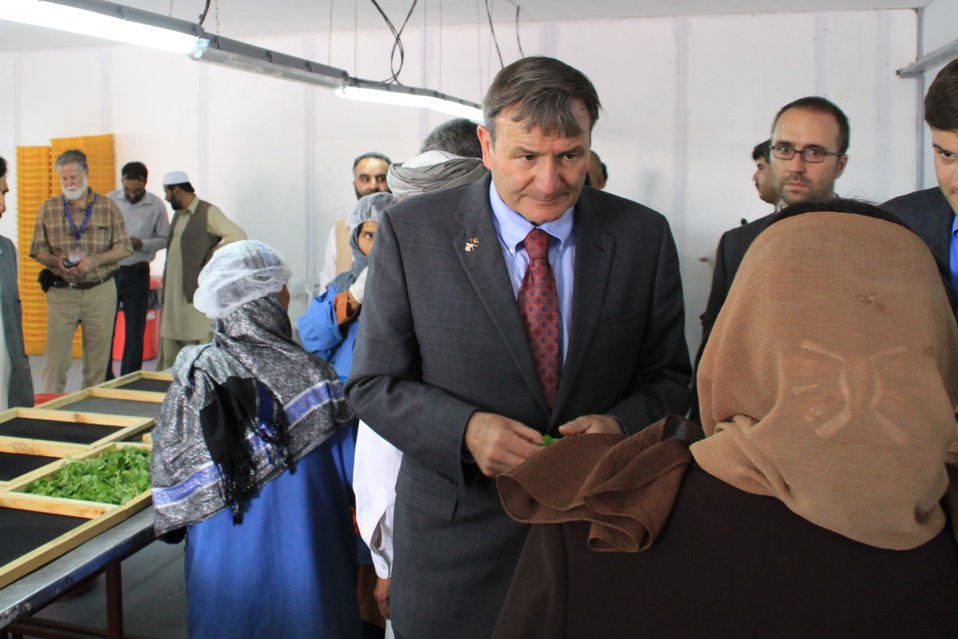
Badam Bagh Farm